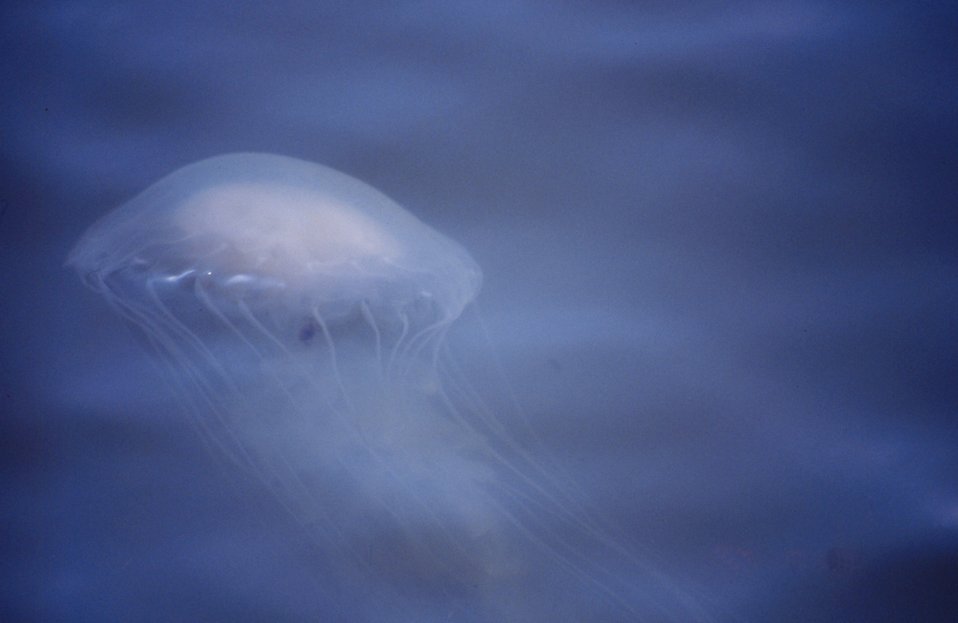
The bane of Chesapeake Bay swimmers, the stinging sea nettle, Chrysaora quiquecirrha.